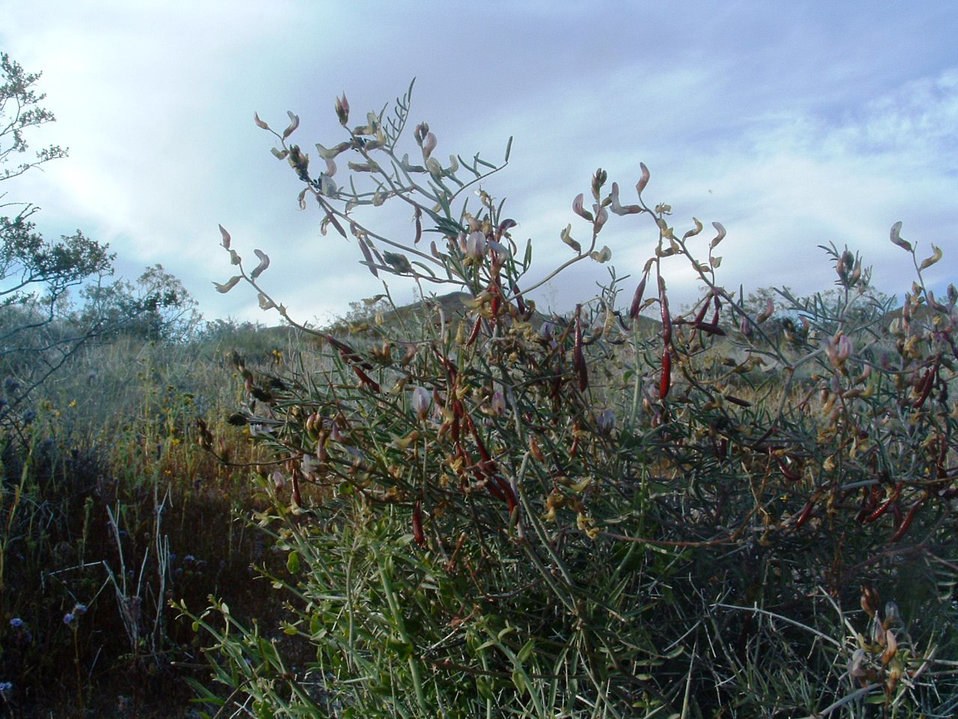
Lane Mountain Milk Vetch

Lane Mountain milk-vetch with flowers and pods.